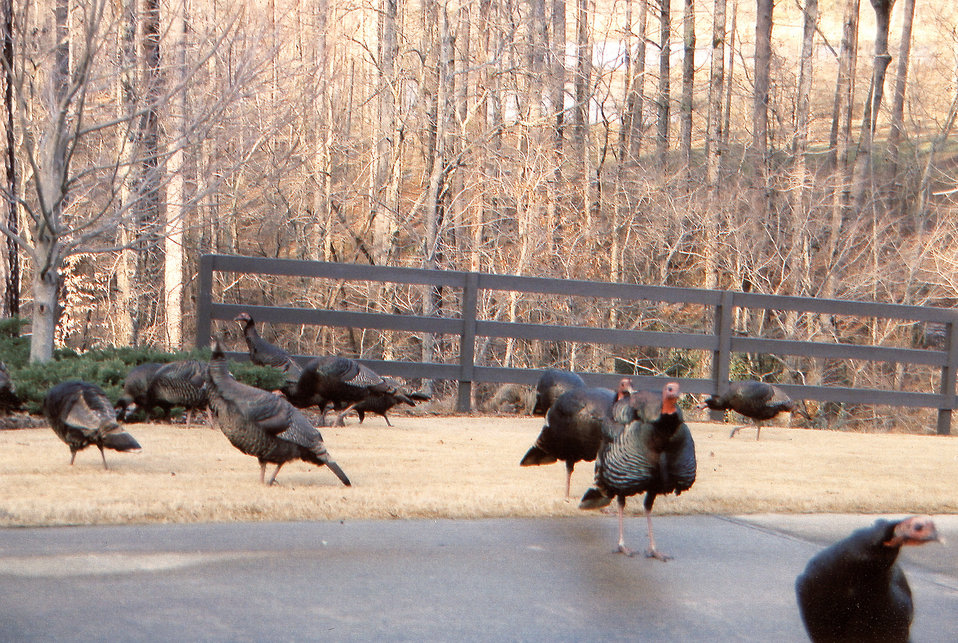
This photograph taken by a CDC, Div. of Creative Services staff member depicts what has become commonplace in his neighborhood, which is the presence of a flock of wild turkeys, Meleagris gallopavo.